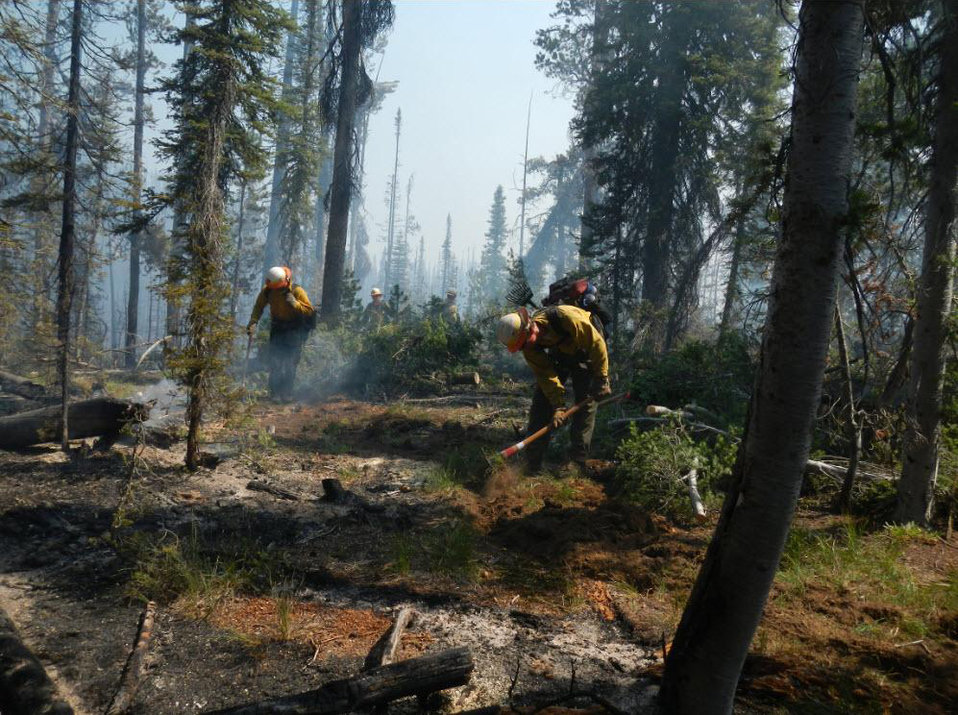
Firefighters work in dense fuels area of the Ridge Fire. The Ridge Fire in the Boise National Forest, ID near Lowman, ID began on Jul. 16, 2013 by lightning and has consumed approximately 5,143 acres. The Ridge Fire is approximately 20% contained.